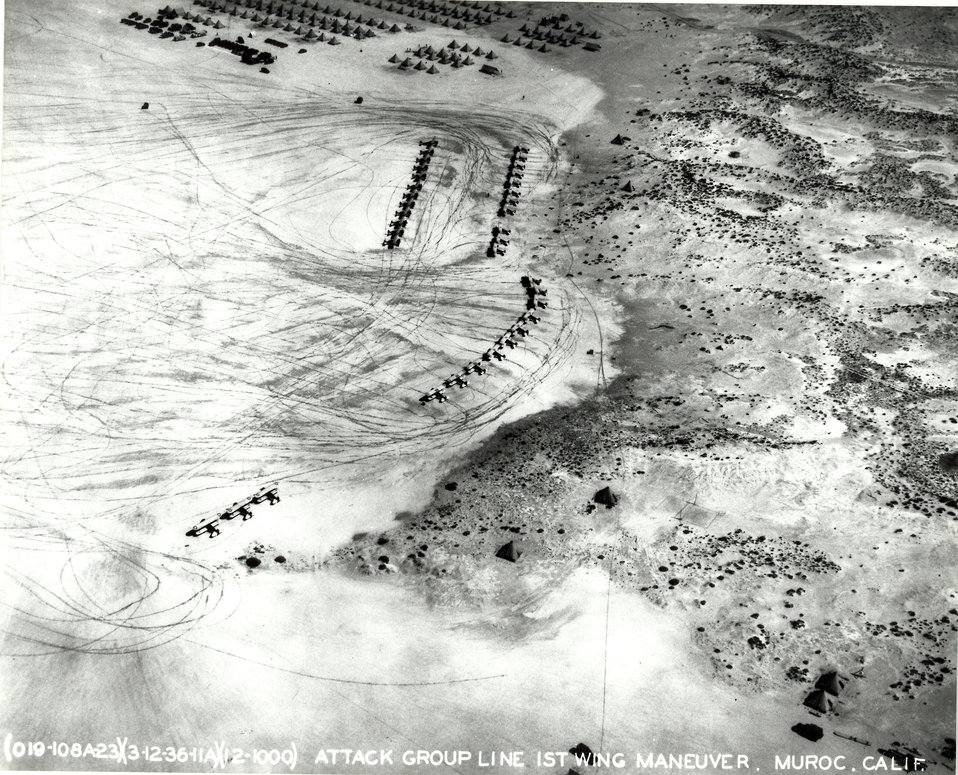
1st Wing aircraft

Overhead view of aircraft from the1st Wing of the Army Air Corps parked on the lake bed adjacent to the tent encampment at Muroc, Calif., in 1936.